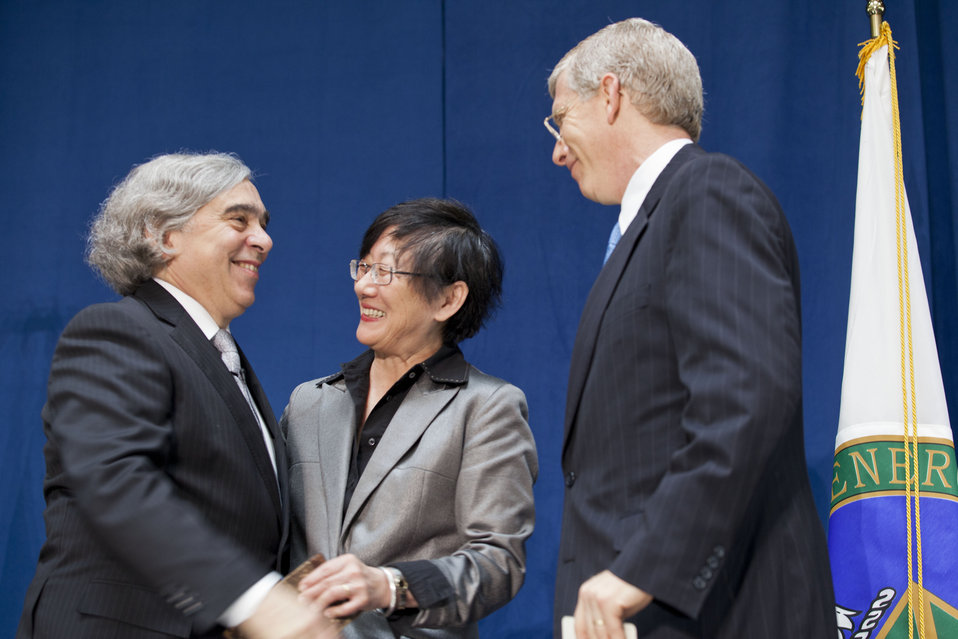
Secretary Moniz's Oath of Office

Secretary Ernest Moniz (left), with his wife, Naomi, shortly after being sworn into office by Deputy Energy Secretary Daniel Poneman (right).